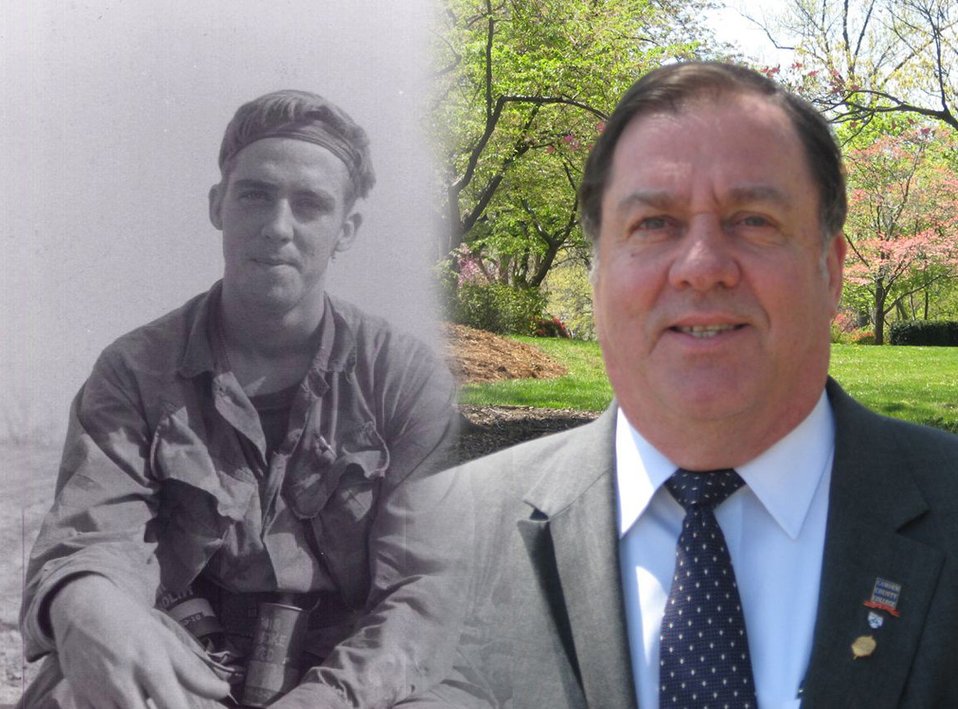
Veteran helps others achieve American dream

Eugene Toni, shown at left as a member of the 101st Airborne Division during the Vietnam War, is the advisor for the Air Force Small Business Office's Service-Disabled Veteran-Owned Small Business program.